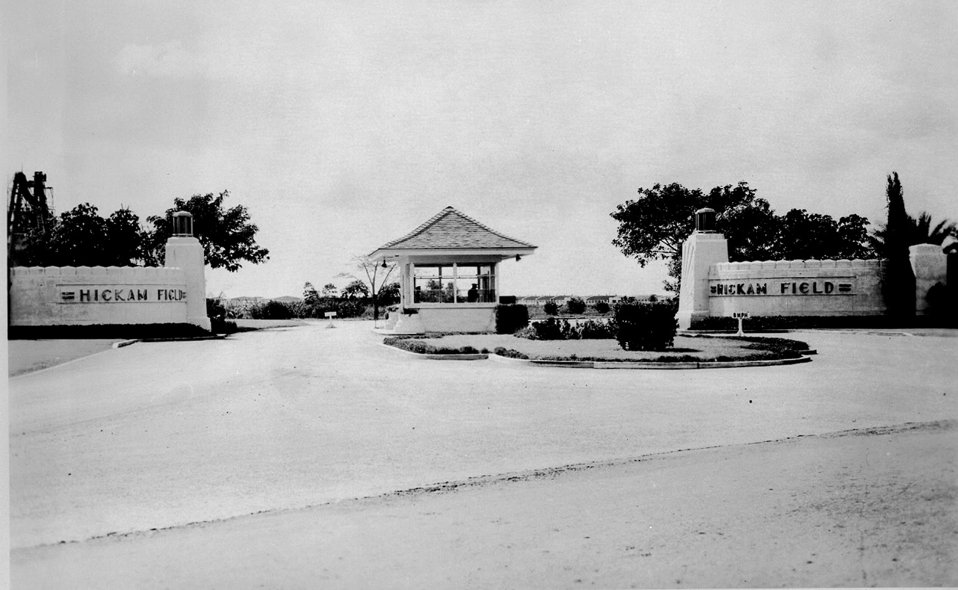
Main gate

The main gate at Hickam Field, Hawaii, in January, 1940.